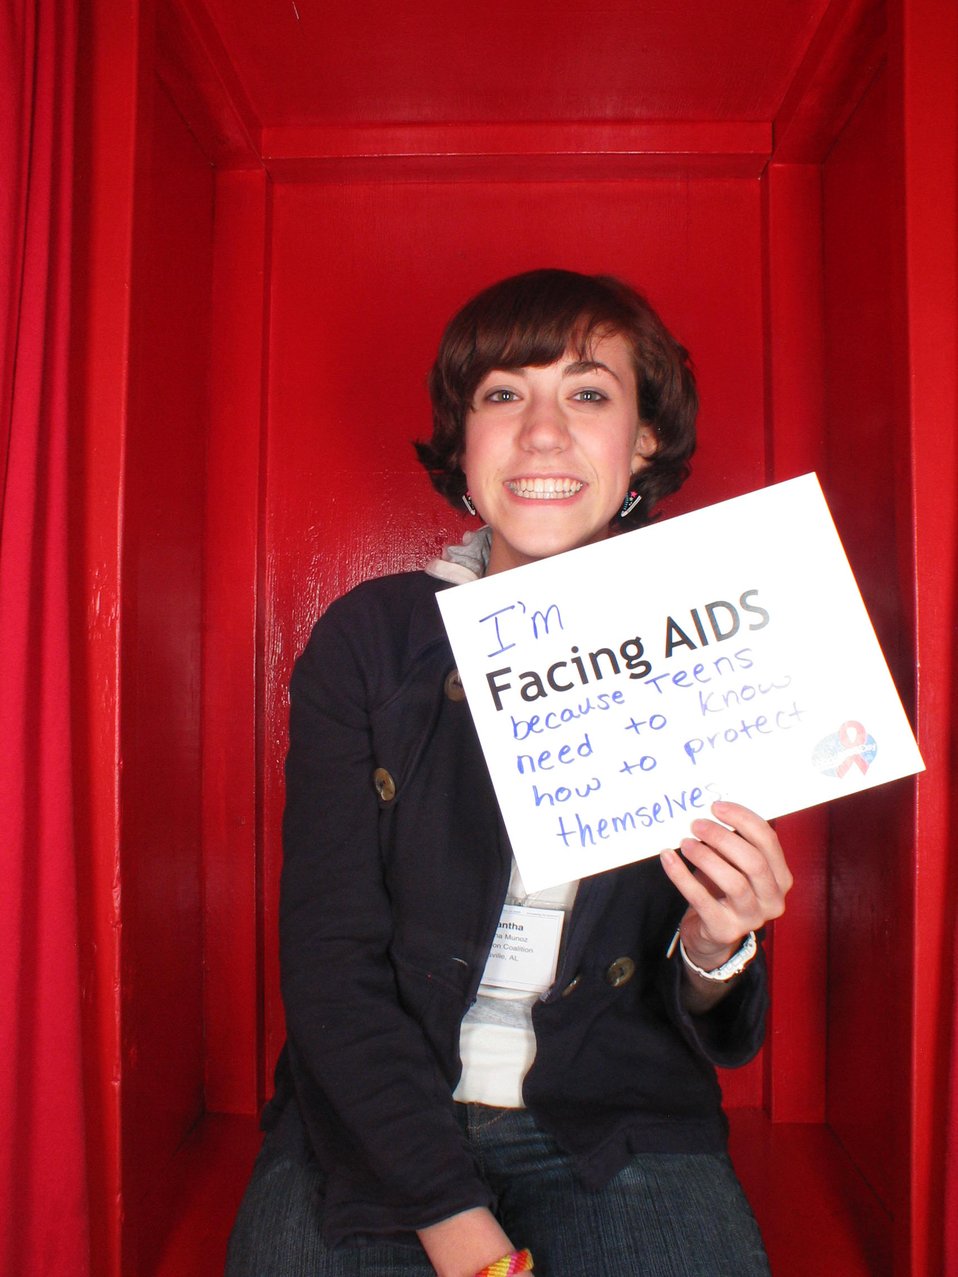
I'm Facing AIDS because teens need to know how to protect themselves.